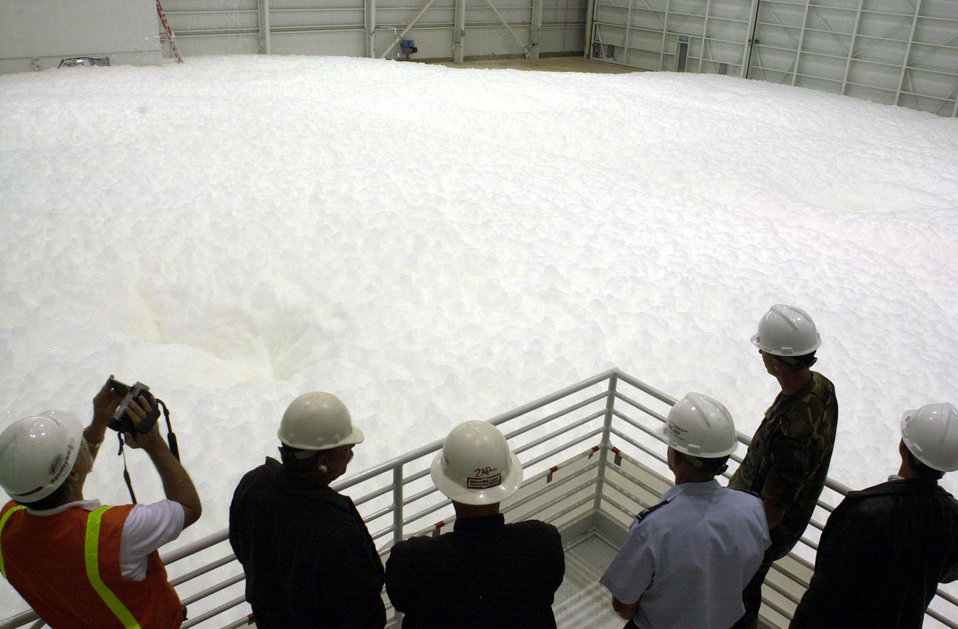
C-17s get state-of-the-art home

MARCH AIR RESERVE BASE, Calif. -- People from the 452nd Air Mobility Wing's civil engineer squadron and fire department here observe the final fire sprinkler foam test in a new state-of-the-art hangar built to house the wing's C-17 Globemaster IIIs, which are scheduled to begin arriving Aug. 9. As one of many safety features designed for the hangar, foam is dispensed from nine generators that can smother flames in less than one minute.